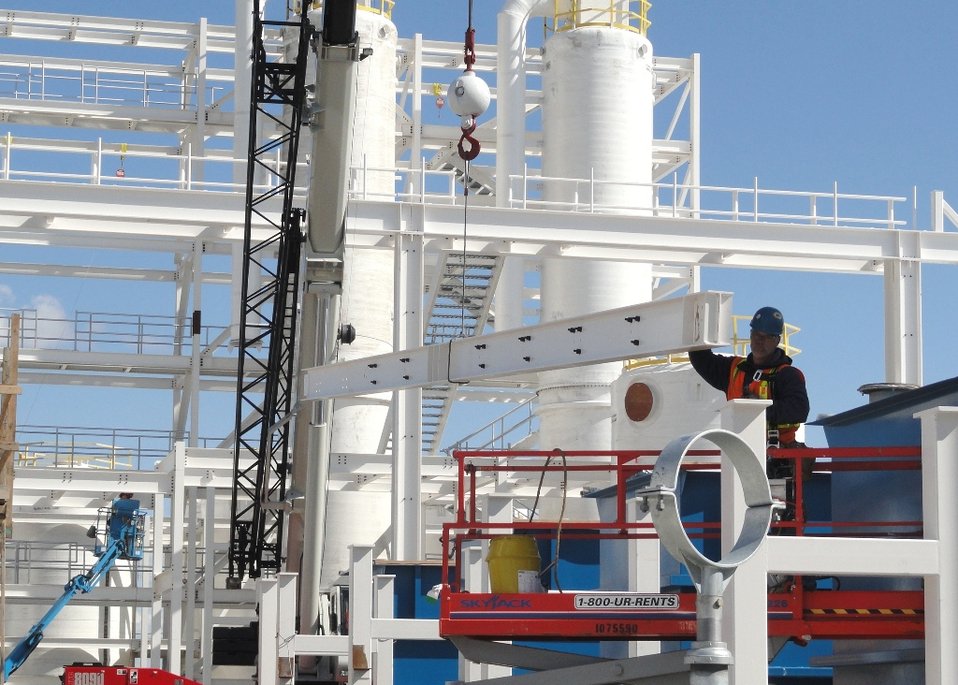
Recovery Act Supports Construction of Site’s Largest Groundwater Treatment Facility

Recovery Act workers in various stages of construction of what will be the largest groundwater treatment facility at the Hanford Site.